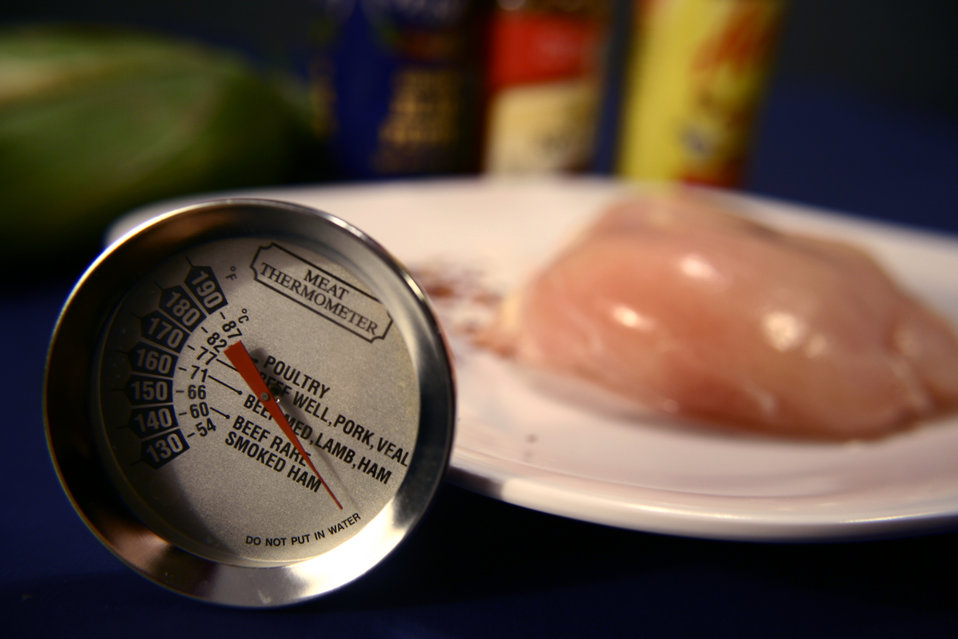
Taken in a home kitchen setting, in its background, this photograph depicts a skinned and boneless piece of chicken breast meat set atop a clean, white ceramic platter. In the foreground, you'll note a cooking meat thermometer, which can be used in order to determine the interior cooking temperature of foods such as this chicken breast. The cooking temperature reached inside the meat needs to be sufficient enough to kill any pathogenic organisms including salmonella.